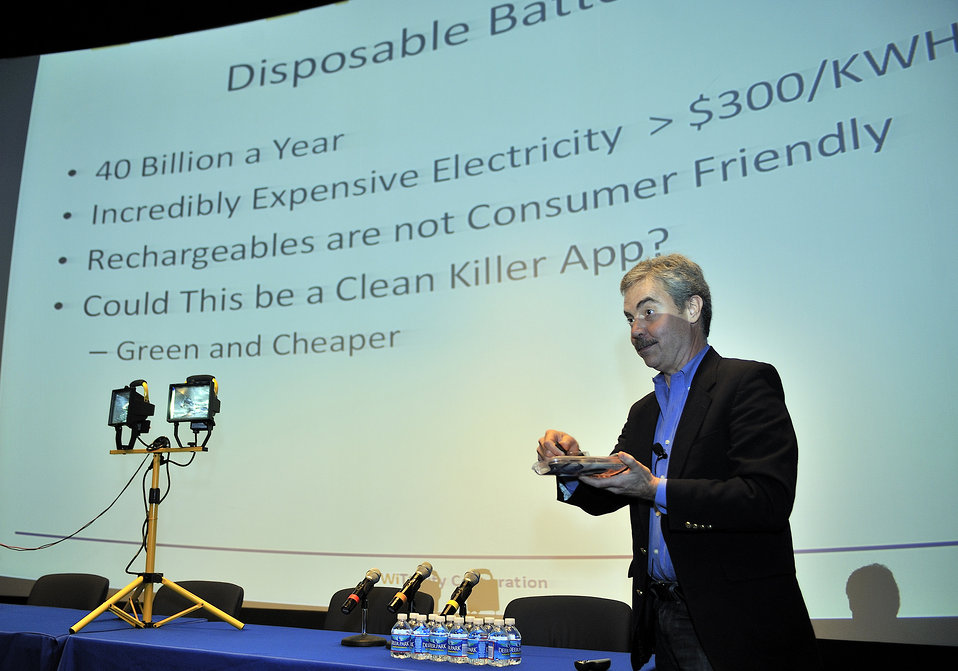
National Clean Energy Business Plan Competition

The National Clean Energy Business Plan Competition inspired nearly 300 university teams across the country to create new businesses to commercialize promising energy technologies developed at U.S. universities and the National Laboratories.